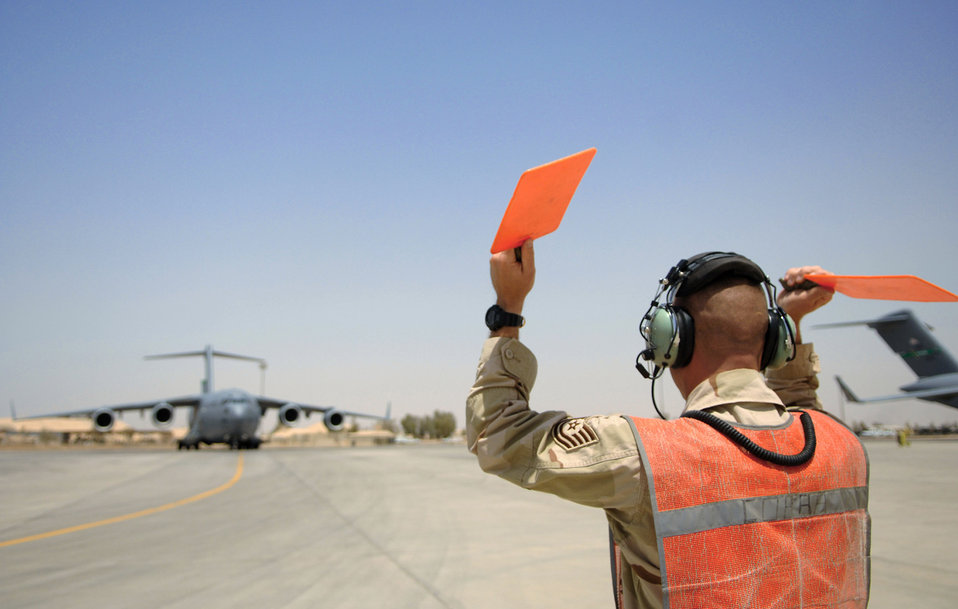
Follow me

Tech. Sgt. Frank Wisnieski marshals in a C-17 Globemaster III May 12 at Balad Air Base, Iraq. Directing an aircraft into an appropriate parking location is crucial to ensuring safe airfield operations and enables flightline personnel to execute their duties. Sergeant Wisnieski is a 332nd Expeditionary Maintenance Squadron transient alert supervisor deployed from Ramstein Air Base, Germany.